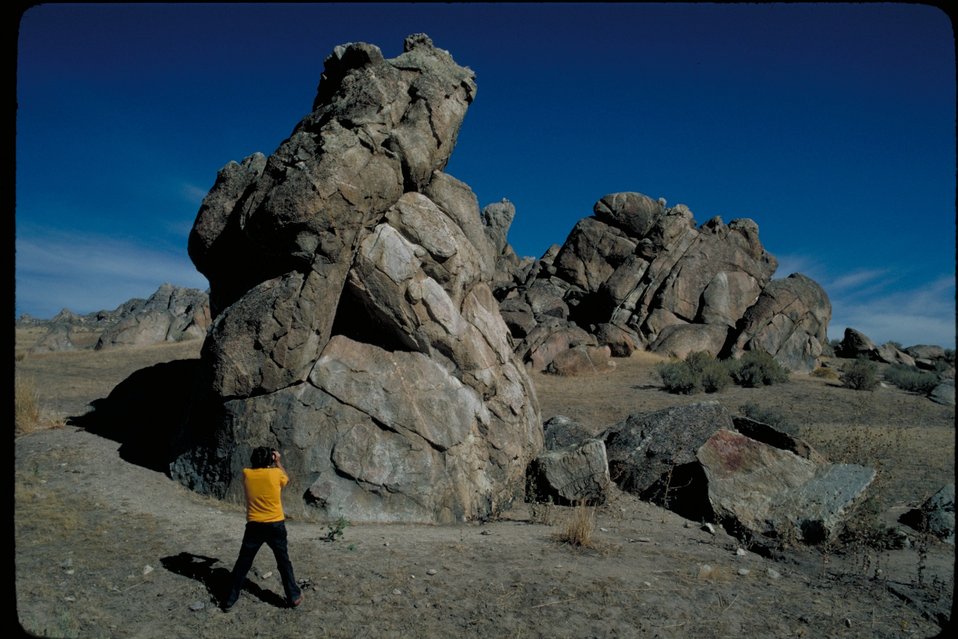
Oregon Trail inscriptions near Ditto Creek Lower Snake River District